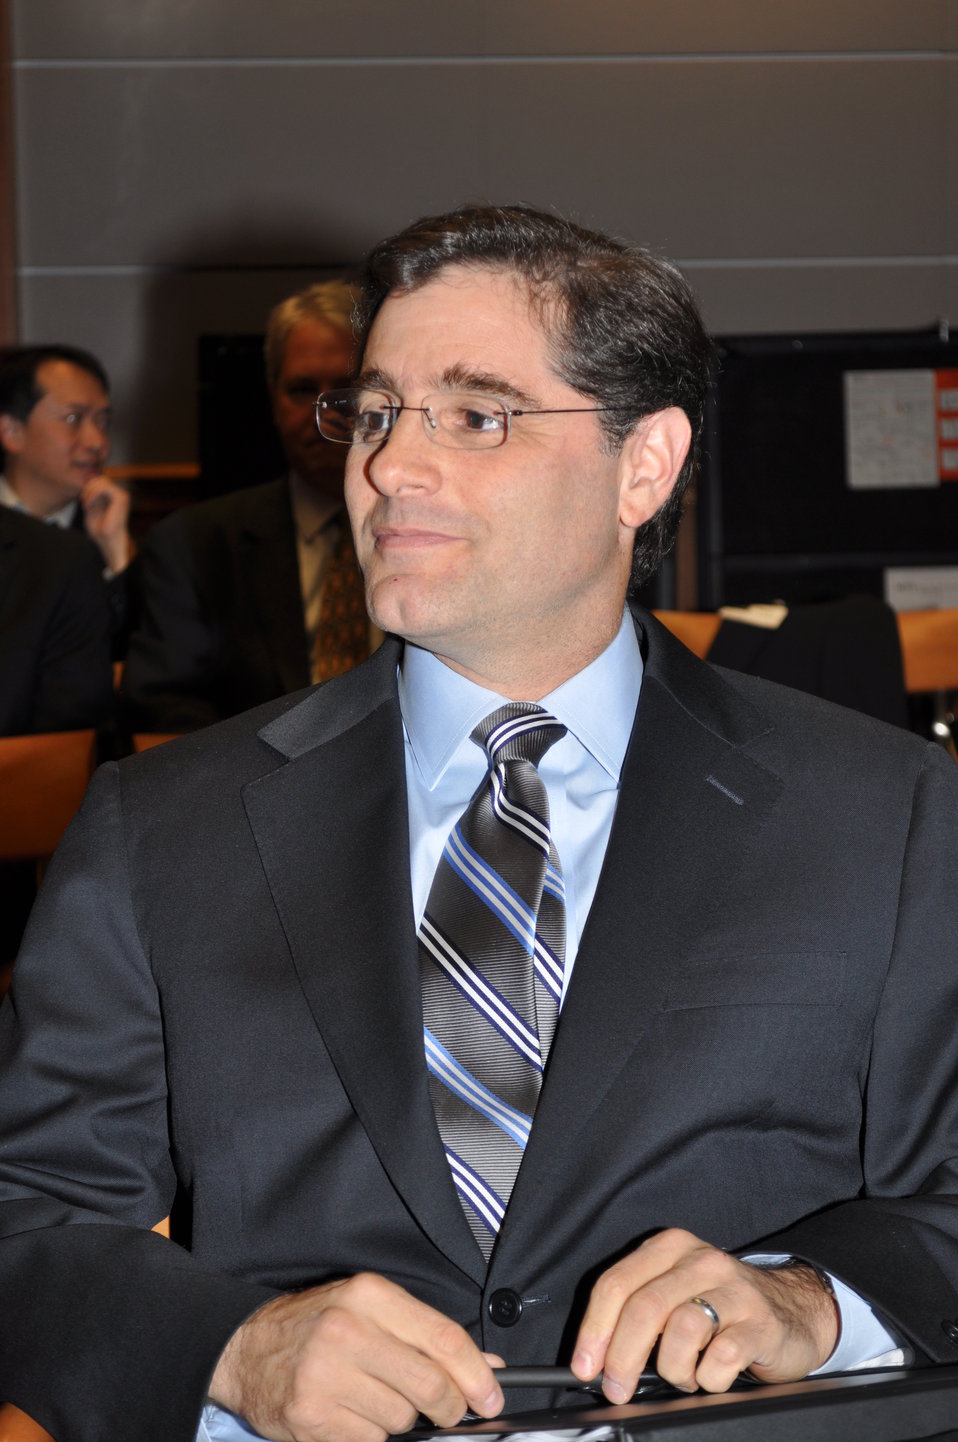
Spectrum Summit